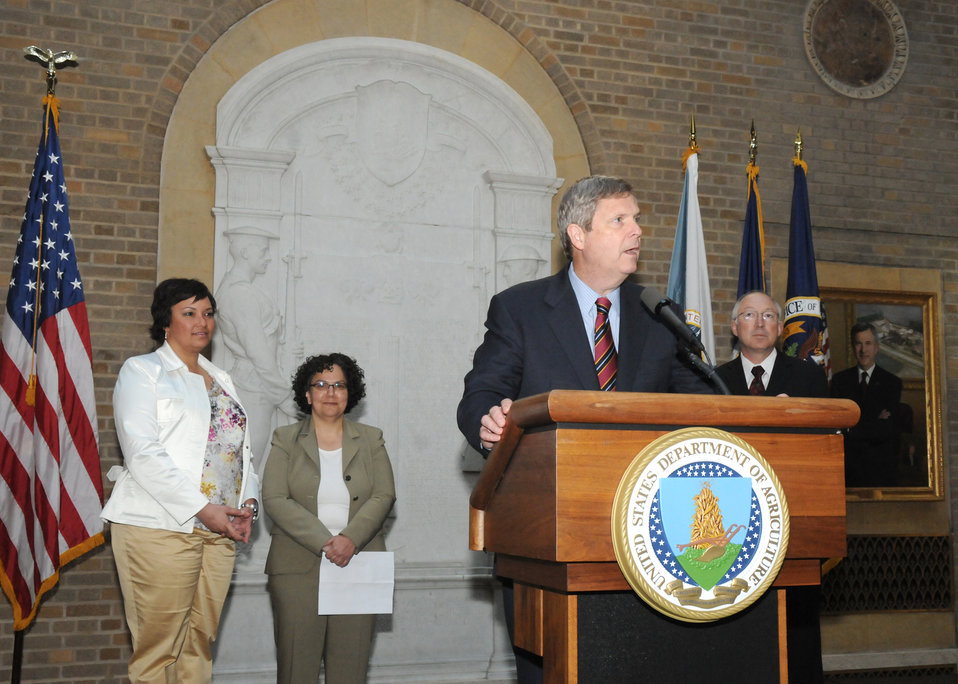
Agriculture Secretary Tom Vilsack makes remarks at the White House Conference on America’s Great Outdoors reception held at the Department of Agriculture on Thursday, April 15, 2010. (L to R in background Environmental Protection Agency Administrator Lisa Jackson, Council on Environmental Quality Chair Nancy Sutley, and Interior Secretary Ken Salazar) USDA photo 10di1315-49